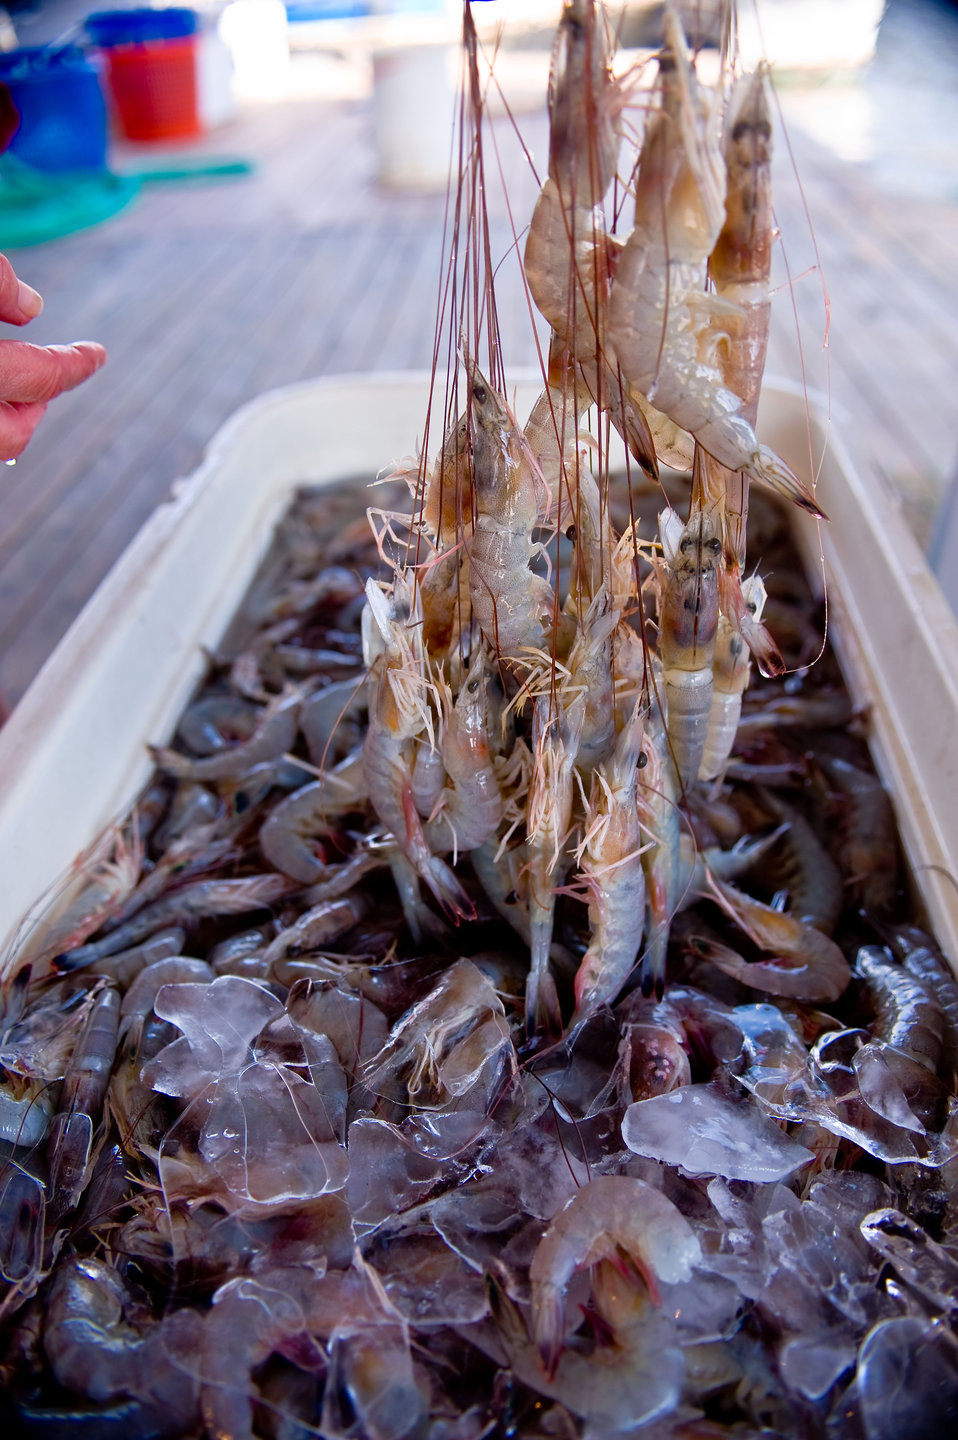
Many fear for the safety of shrimp.

May 12, 2010.